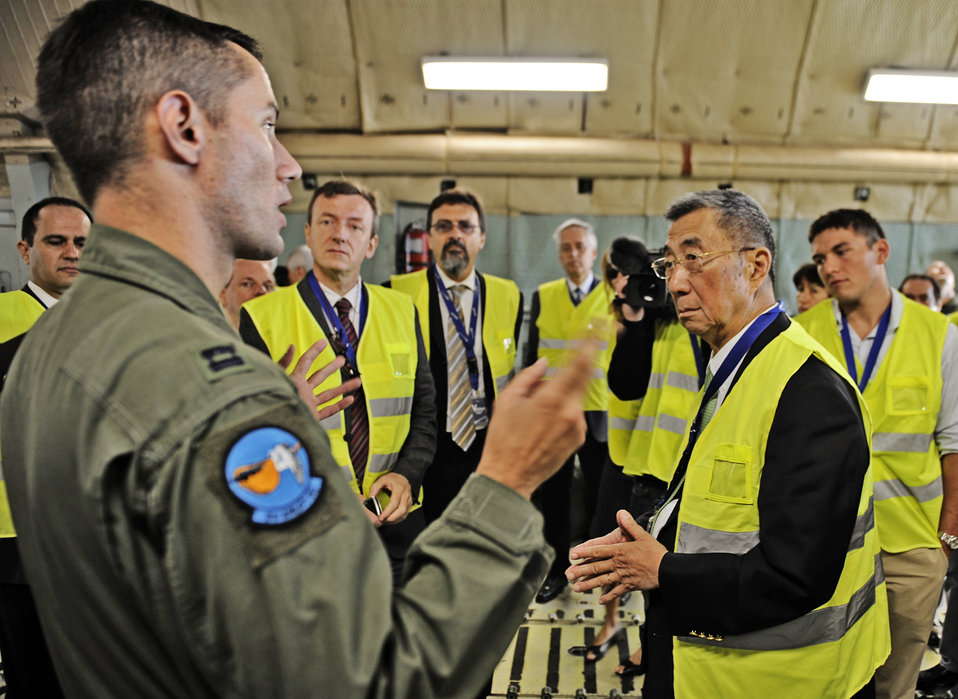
C-5M and AMS

Capt. Cory Damon speaks to scientists and engineers about the C-5M Super Galaxy Aug. 25, 2010, at the Geneva airport. Captain Damon is a C-5M pilot assigned to the 9th Airlift Squadron at Dover Air Force Base, Del.